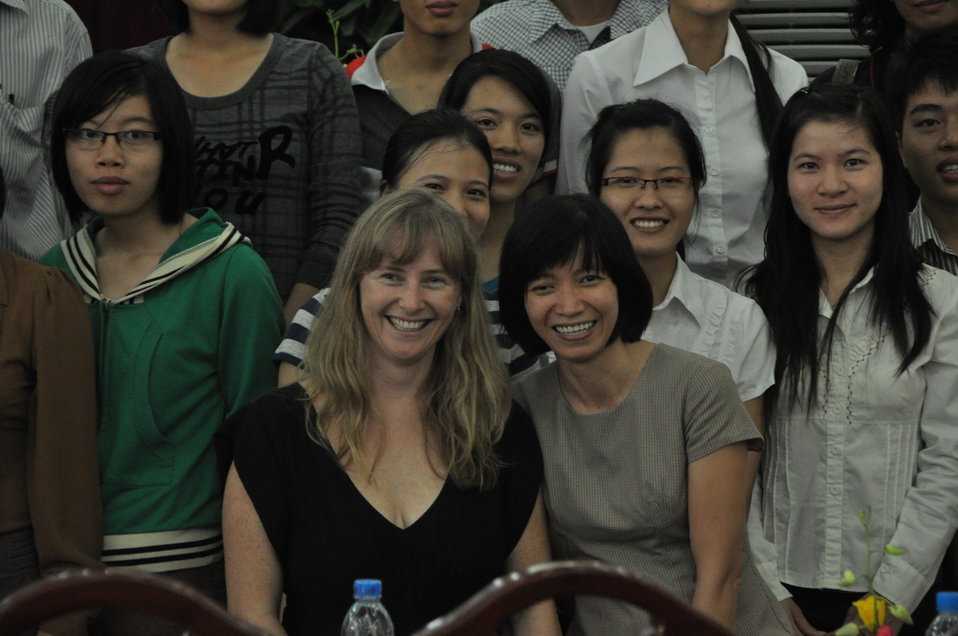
EPT PREDICT Pathology Workshop Group Shot